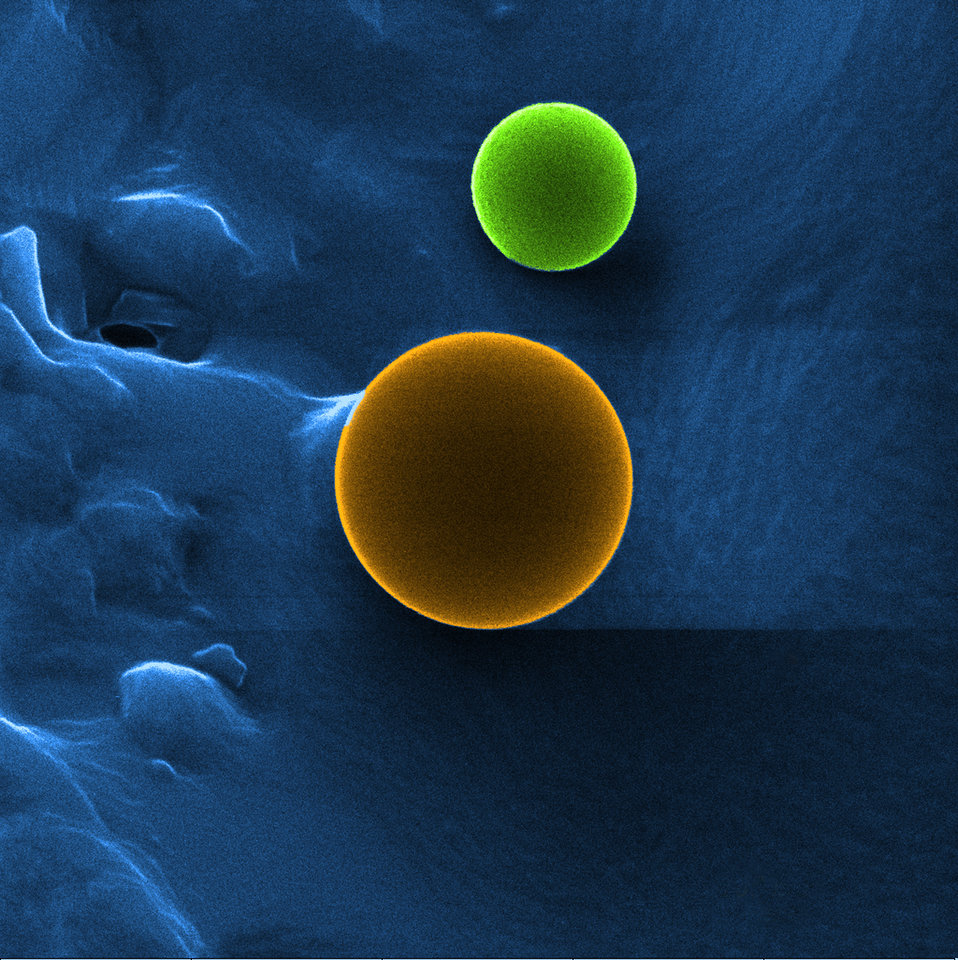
Shown is a colorized image, created using a helium ion microscope, shows a used photocathode electrode obtained from the Thomas Jefferson National Accelerator Facility.

Photocathodes are used to direct high-energy beams, such as X-rays, at samples. Researchers at PNNL have made a first attempt to understand how and why the expensive photocathode materials degrade with repeated use. Knowing more could lead to longer-lasting photocathodes, less down time for maintenance, lower cost of instruments and deeper insight into the particles and forces that make up our universe.